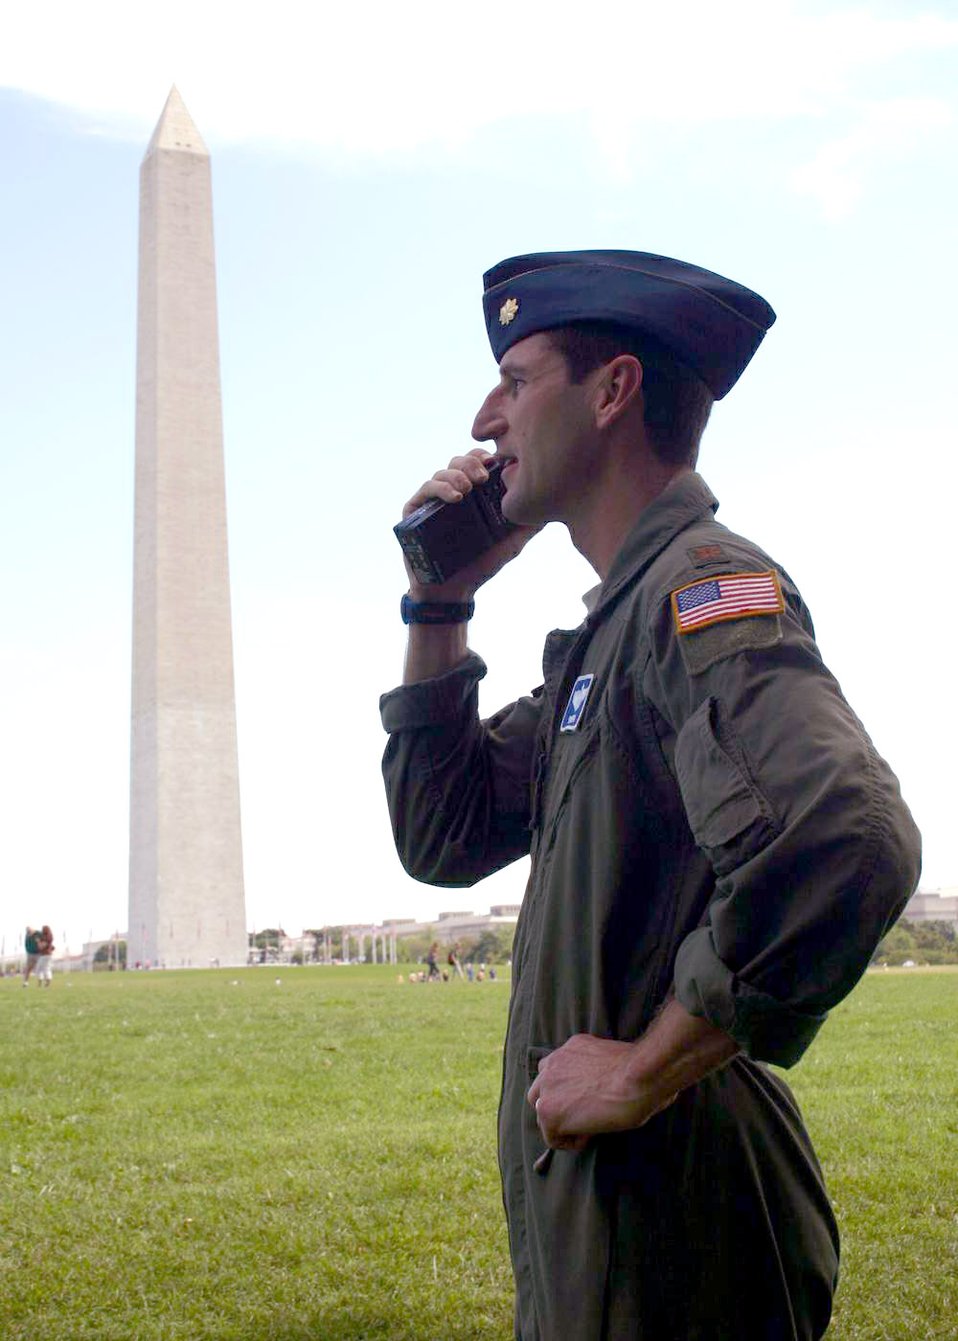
Airmen honor America's fallen

Maj. Mike McHugh coordinates a flyover of three F-15 Eagles from the 33rd Fighter Wing from Eglin Air Force Base, Fla., Sept. 20 in Washington, D.C. Major McHugh is assigned to Air Combat Command headquarters at Langley AFB, Va.